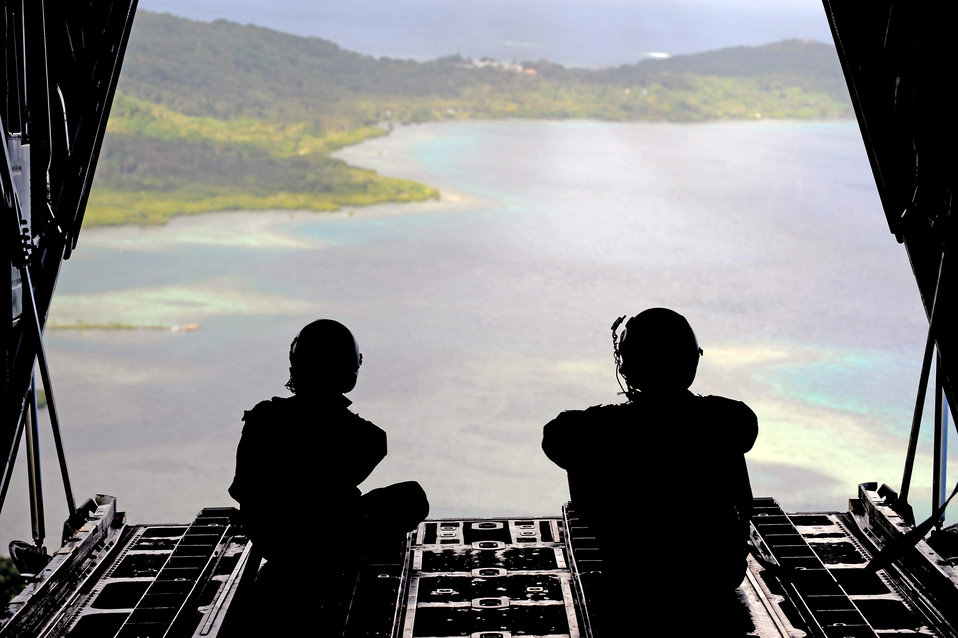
Operation Christmas Drop

Senior Airman Robert Gore and Airman 1st Class Dustin Deveaux observe the drop zone from a C-130 Hercules during Operation Christmas Drop Dec. 19 over the remote Island of Yap. In all, more than 180 boxes were built for the humanitarian mission, making 2008 one of the largest drops in Operation Christmas Drop's 57-year history. Airmen today continue the tradition of delivering supplies to remote islands of the Commonwealth of the Northern Marianas Islands, Yap, Palau, Chuuk and Pohnpei. Airmen Gore and Deveaux are crewmembers are from the 36th Airlift Squadron from Yokota Air Base, Japan.